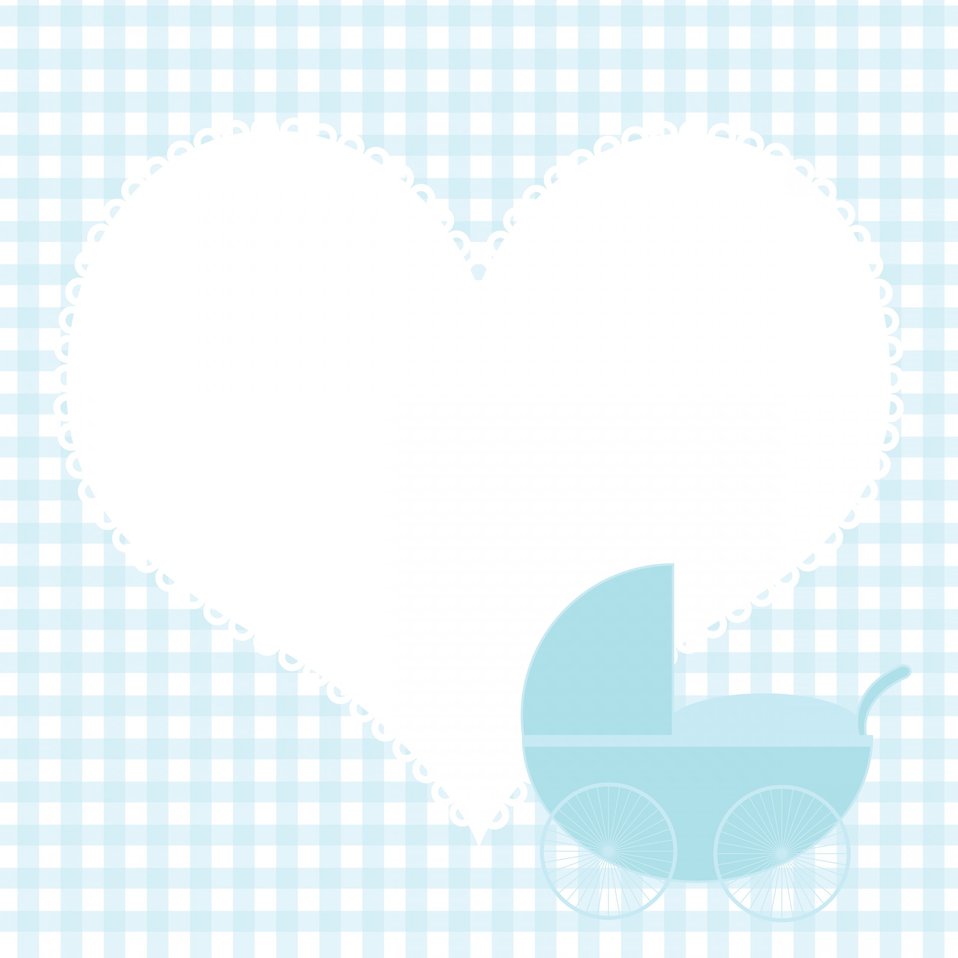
Baby boy heart background

Cute background for baby boy arrival card or baby shower.